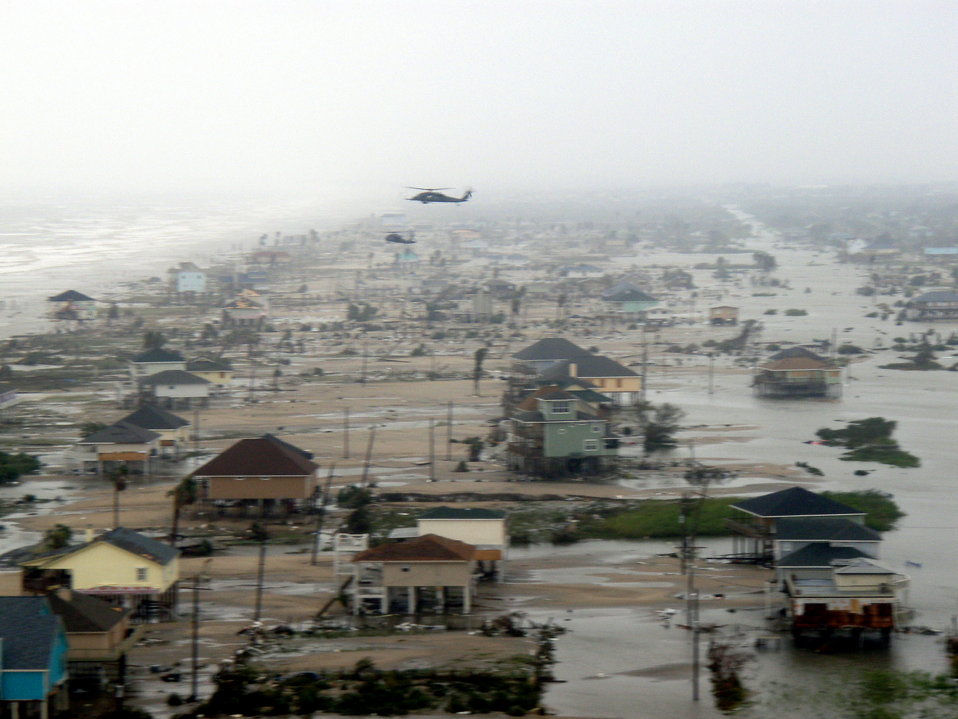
Helicopter aircrews rescue hurricane victims

Two Joint Task Force 129 crews on board HH-60G Pave Hawks fly over Crystal Beach, Texas, Sept. 13. The JTF 129 crews rescued 48 people and pets stranded in the Galveston area.